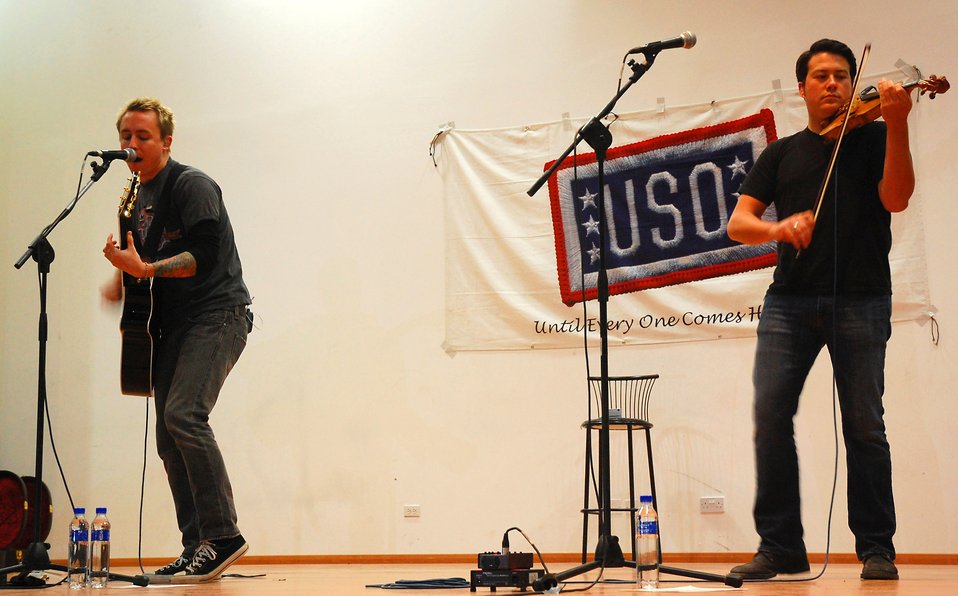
Yellowcard rocks servicemembers in Southwest Asia

Ryan Key and Sean Mackin for the Yellowcard band perform one of their songs Jan. 12 tour of a Southwest Asia air base. Mr. Key is a vocalist and guitar player for the band, and Mr. Mackin is a vocalist and violinist. The tour was a way for the band to say thank you to American servicemembers on their five-day United Service Organizations' tour.